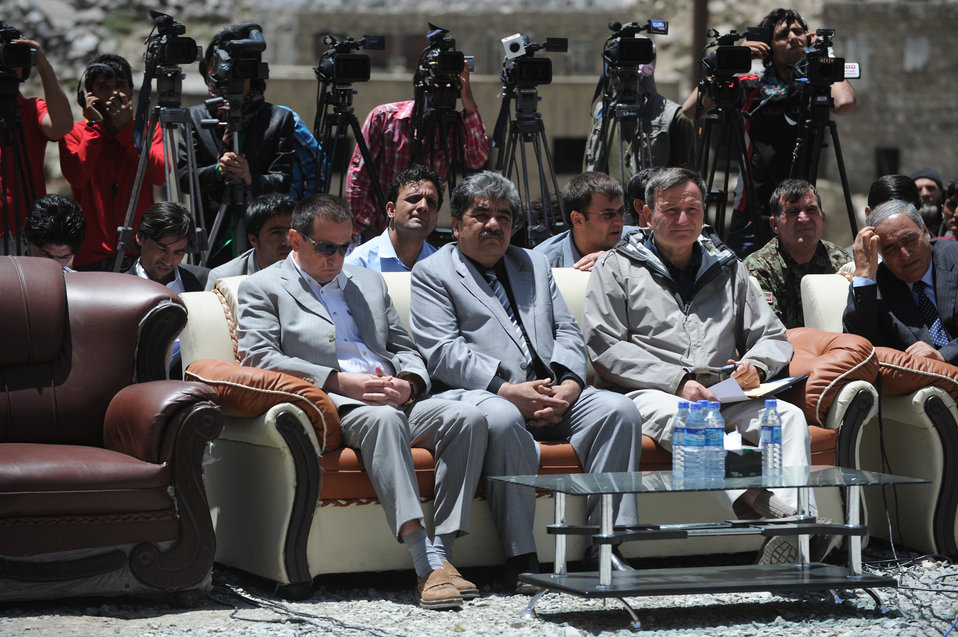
Russian Ambassador Andrey Avetisyan, Minister of Public Works Abdul Qudos Niman Hamidi and U.S. Ambassador Karl W. Eikenberry attend a ceremony to mark the beginning of renovations at the Salang Tunnel on the border of Parwan and Baghlan Provinces, Afghanistan, on Wednesday, June 15, 2011. (S.K.Vemmer/Department of State)